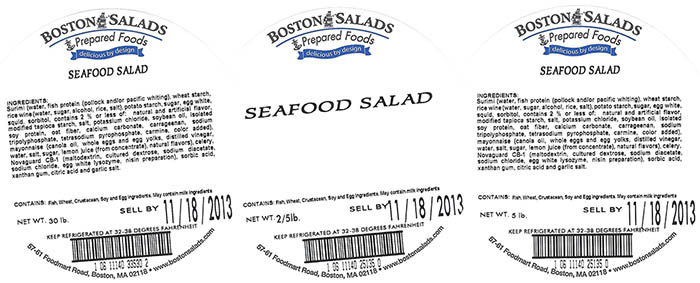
RECALLED – Prepared salads

October 24, 2013 – Product Recall – Boston Salads and Prepared Foods Recalling Ready-To-Eat Products Because of Possible Health Risk.